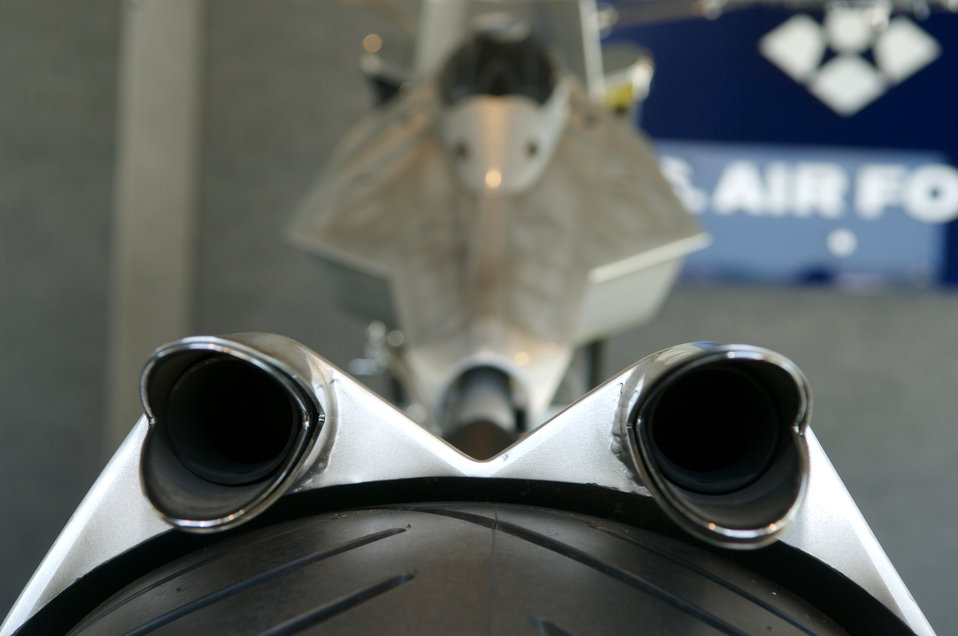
Hog wild

Air Force Orange County Chopper sits on display for Air Force Week in the Heartland Aug. 14 at Dillon Brothers Harley-Davidson in Omaha, Neb. The tail pipes of the motorcycle are based on the exhaust outlets of the F-22 Raptor. The chopper has a 131 cubic inch engine that generates 150 horsepower. From end to end it stretches 10 feet 3 inches. It features a six-speed Baker right-hand drive that puts power to the 300 series Avon Venom rear tire. The color scheme is based on the F-22.